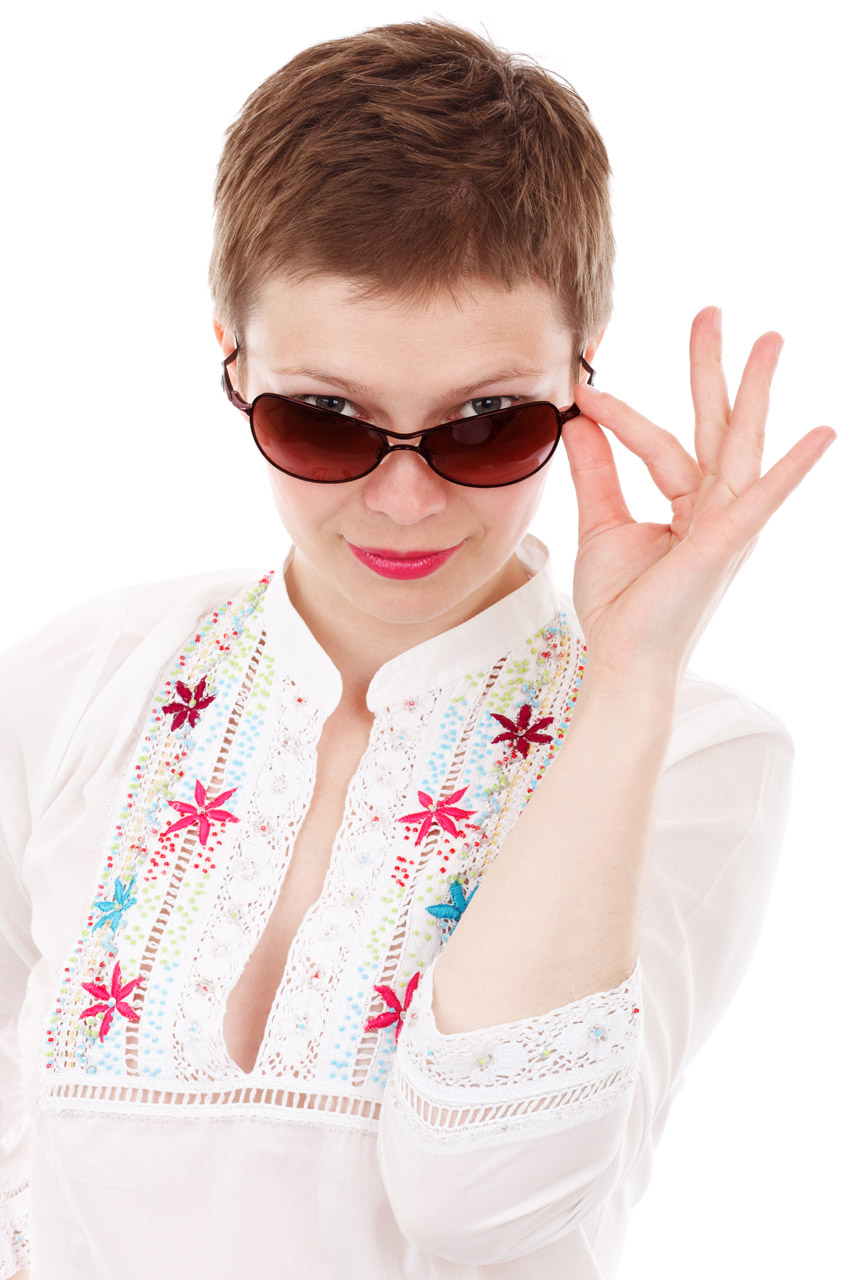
Woman with dark sunglasses

Young woman looking through sunglasses in summer clothes isolated on white background.